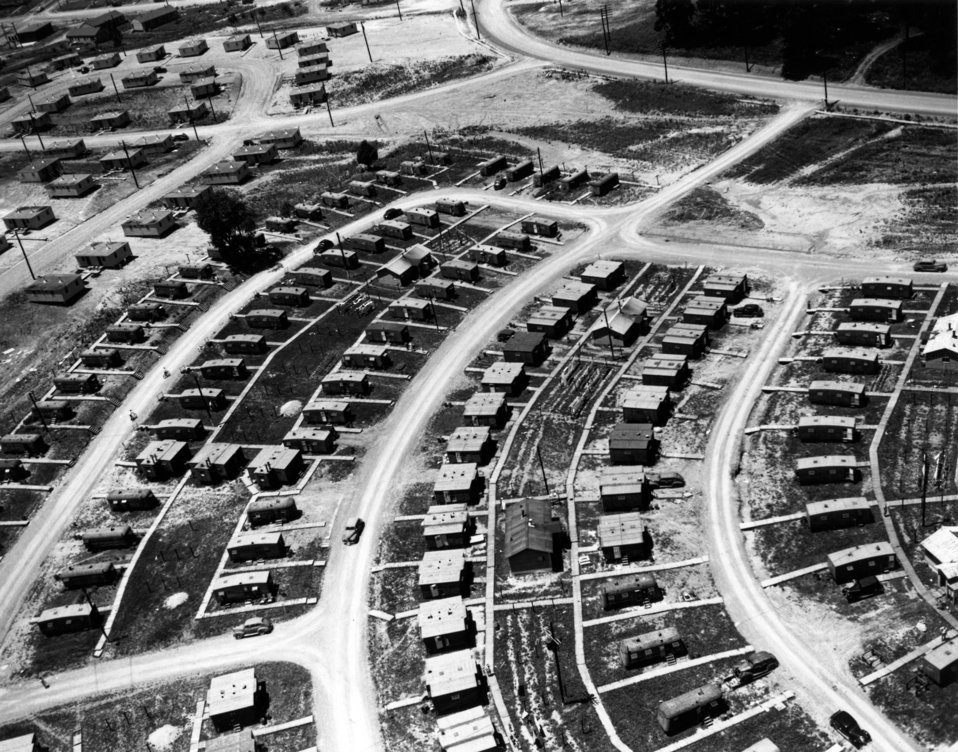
Housing at Oak Ridge